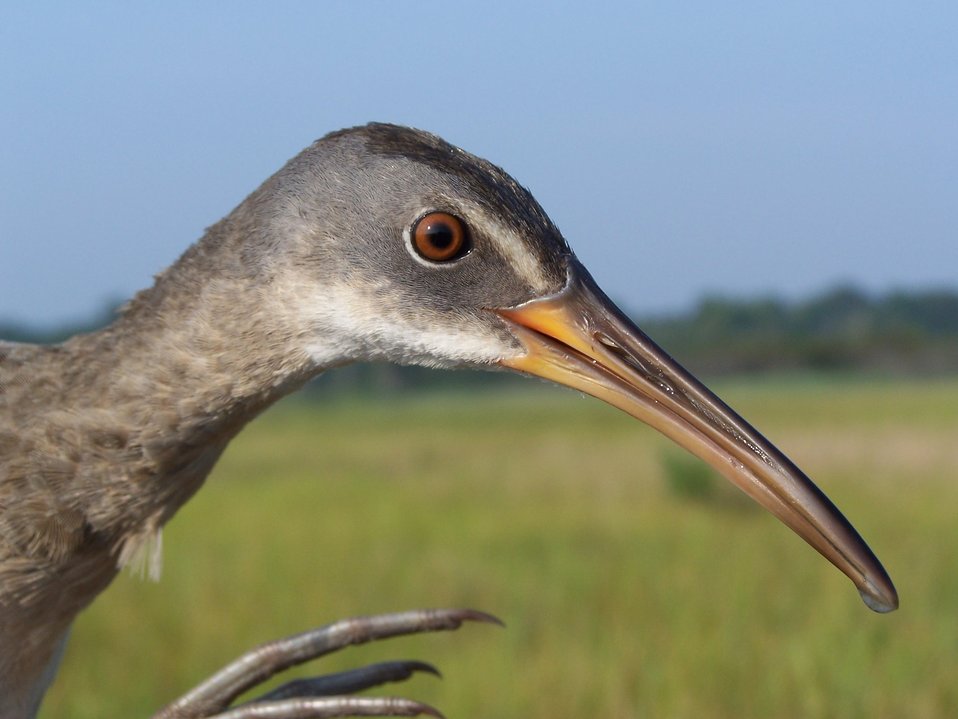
Clapper rail at Prime Hook National Wildlife Refuge.